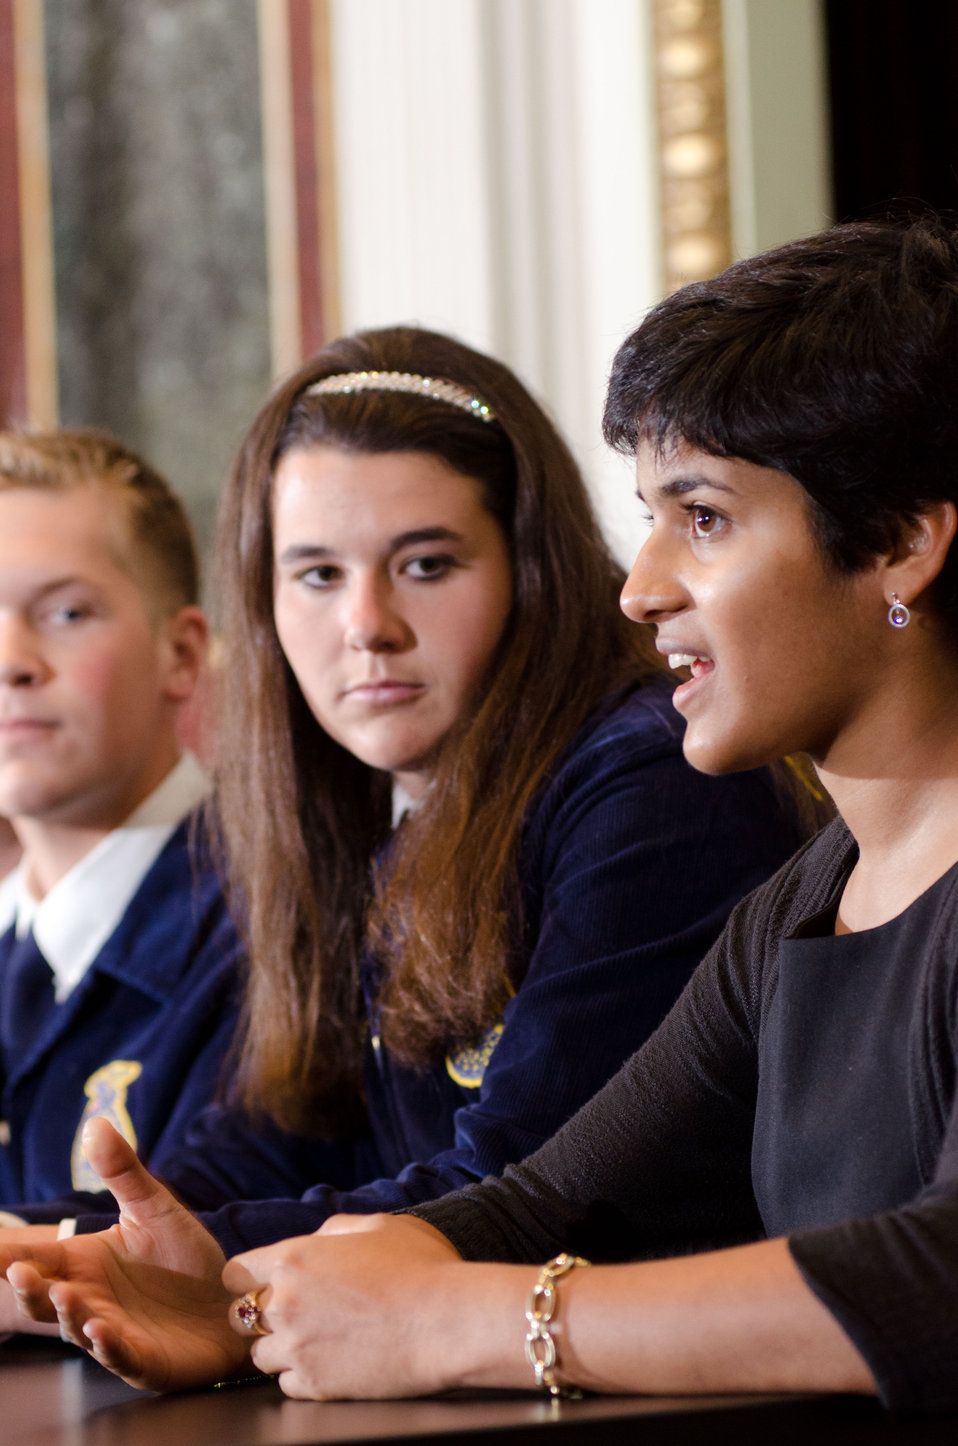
4-H member and Youth Champions of Change panelist Neeta Patel speaks during the Champions of Change Recognition event in the Indian Treaty Room of the Executive Office Building in Washington, D.C. on Tuesday, Oct. 9, 2012. The Champions of Change program was created to honor ordinary Americans doing great work in their communities. Each week, a different sector is highlighted and groups of Champions, ranging from educators, entrepreneurs and community leaders, are recognized for the work they are doing to serve and strengthen their communities.